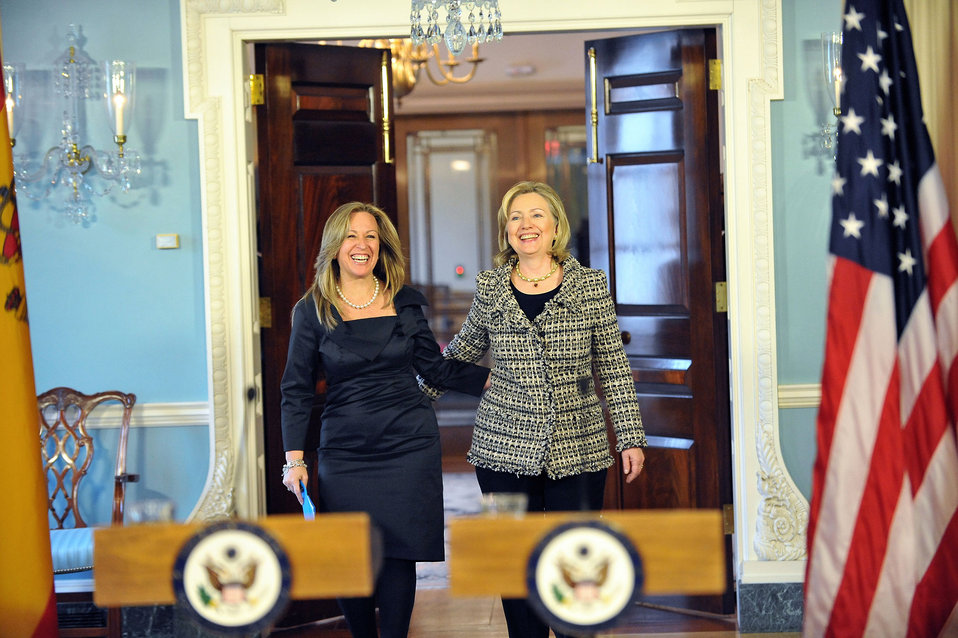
Secretary Clinton and Spanish Foreign Minister Jimenez Walk into the Treaty Room

U.S. Secretary of State Hillary Rodham Clinton and Spain's Foreign Minister Trinidad Jimenez walk in the Treaty Room to deliver remarks at the U.S. Department of State in Washington, DC, on January 25, 2011.